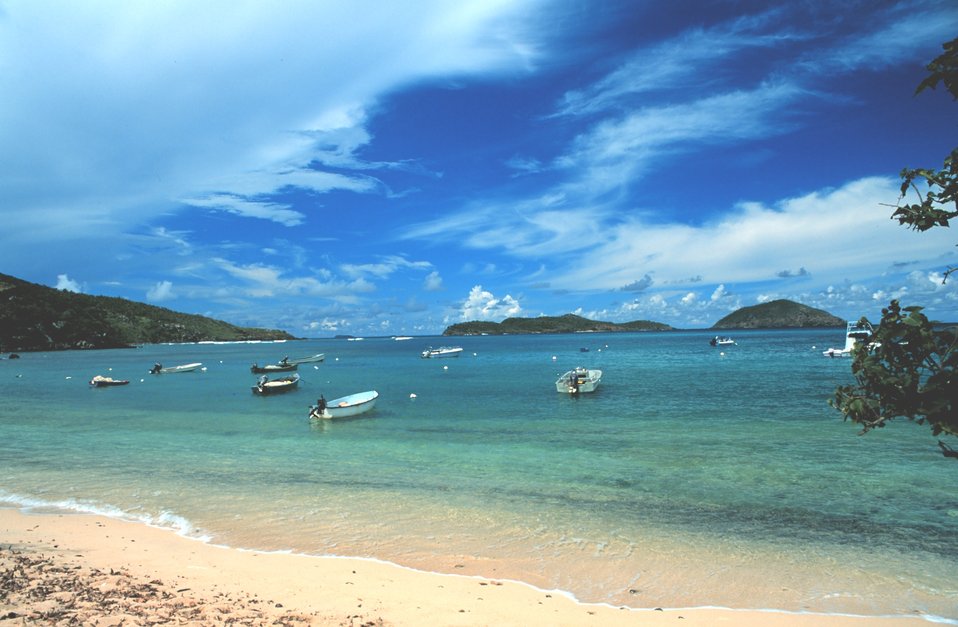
Fishing and pleasure boats at Hull Bay